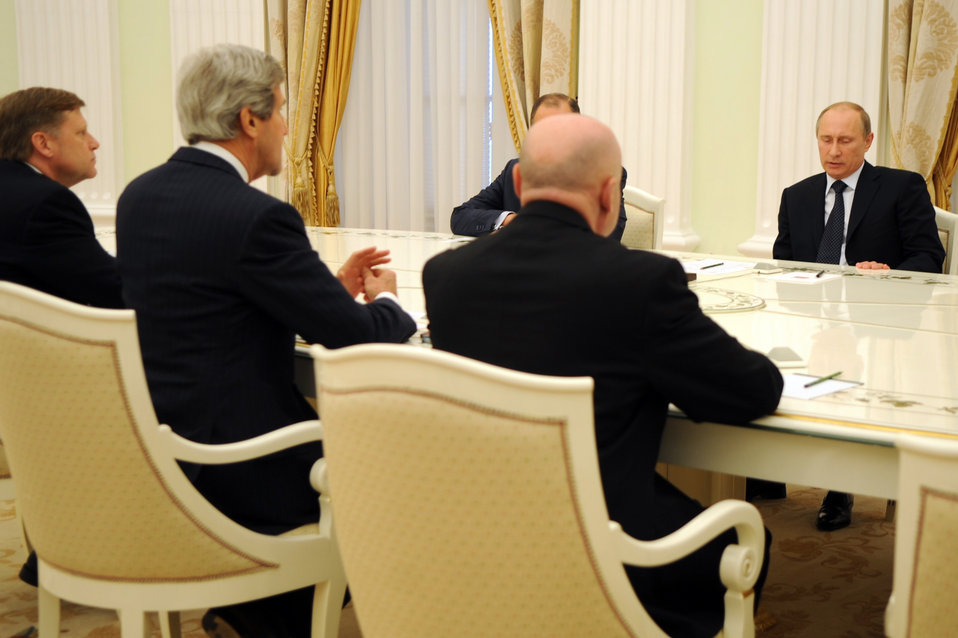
Secretary Kerry Meets With Russian President Putin

U.S. Secretary of State John Kerry, accompanied by U.S. Ambassador to Russia Michael McFaul, left, meets with Russian President Vladimir Putin and Russian Foreign Minister Sergey Lavrov in Moscow, Russia, on May 7, 2013.